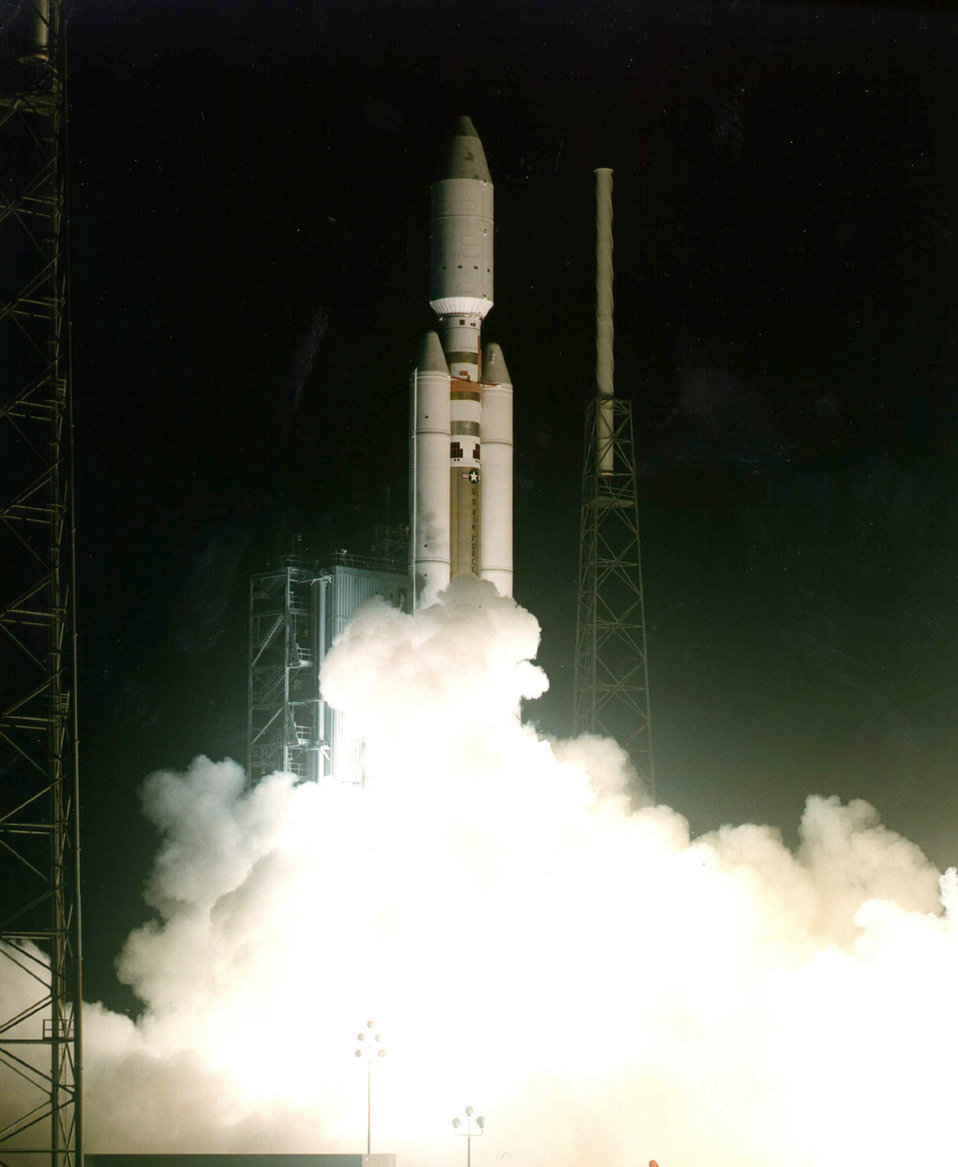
Titan IV-B

PARTRICK AIR FORCE BASE, Fla. -- An Air Force Titan IV-B rocket takes off from Patrick here. Patrick AFB's Eastern Range supported three different ground-to-space launches in five days for the first time since 1964.